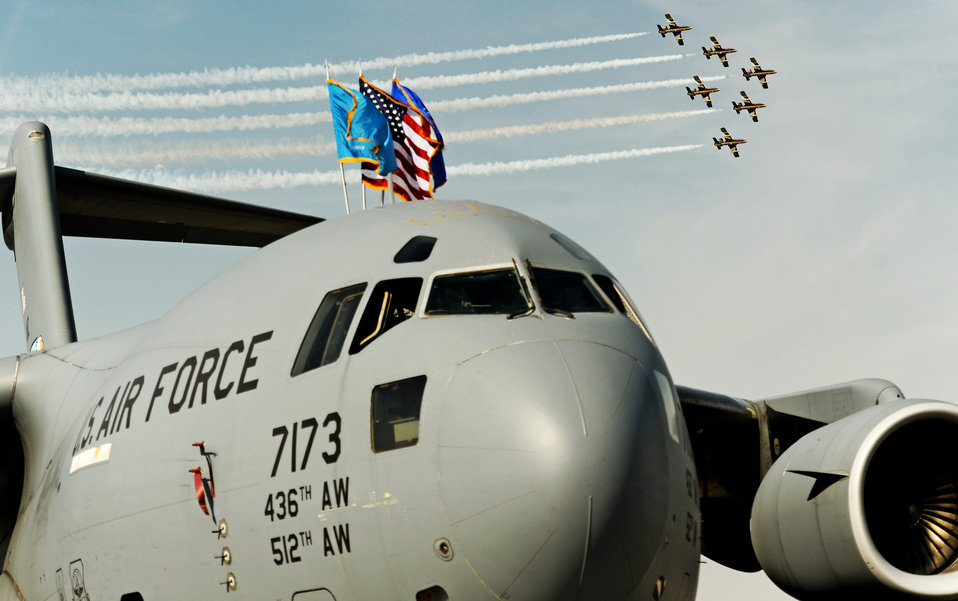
The sky over Dubai

An aerial demonstration team flies over a C-17 Globemaster at the 2011 Dubai Airshow Nov. 13, 2011, in Dubai, United Arab Emirates. This year the static displays. The event demonstrates a shared commitment both to regional security and to developing key relationships throughout Southwest Asia.